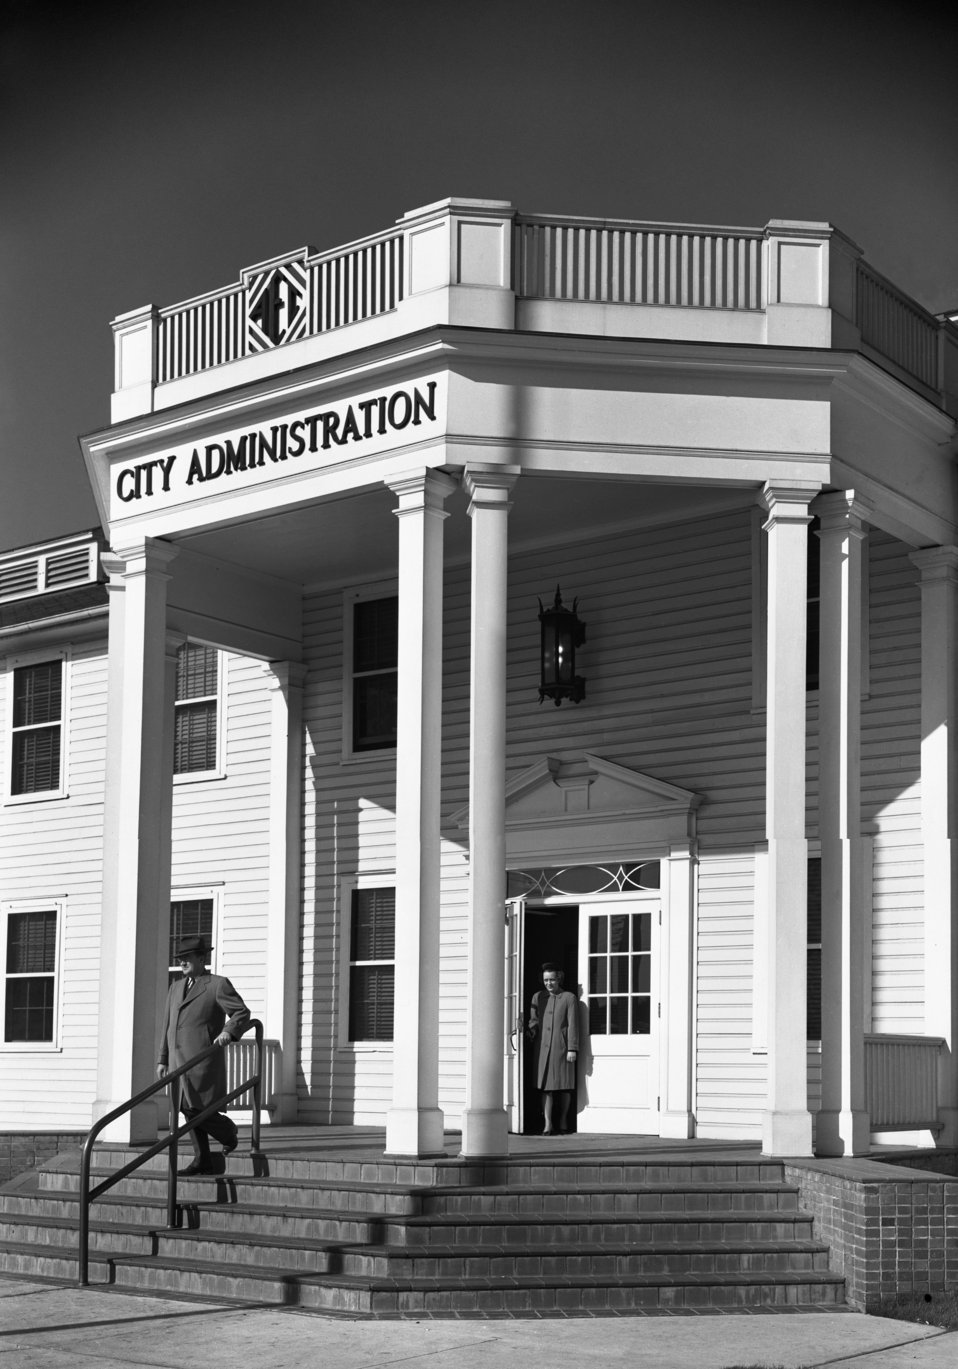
City Administration Building Oak Ridge 1948

4343 DOE photo Ed Westcott 1-6-1948 Oak Ridge Tennessee